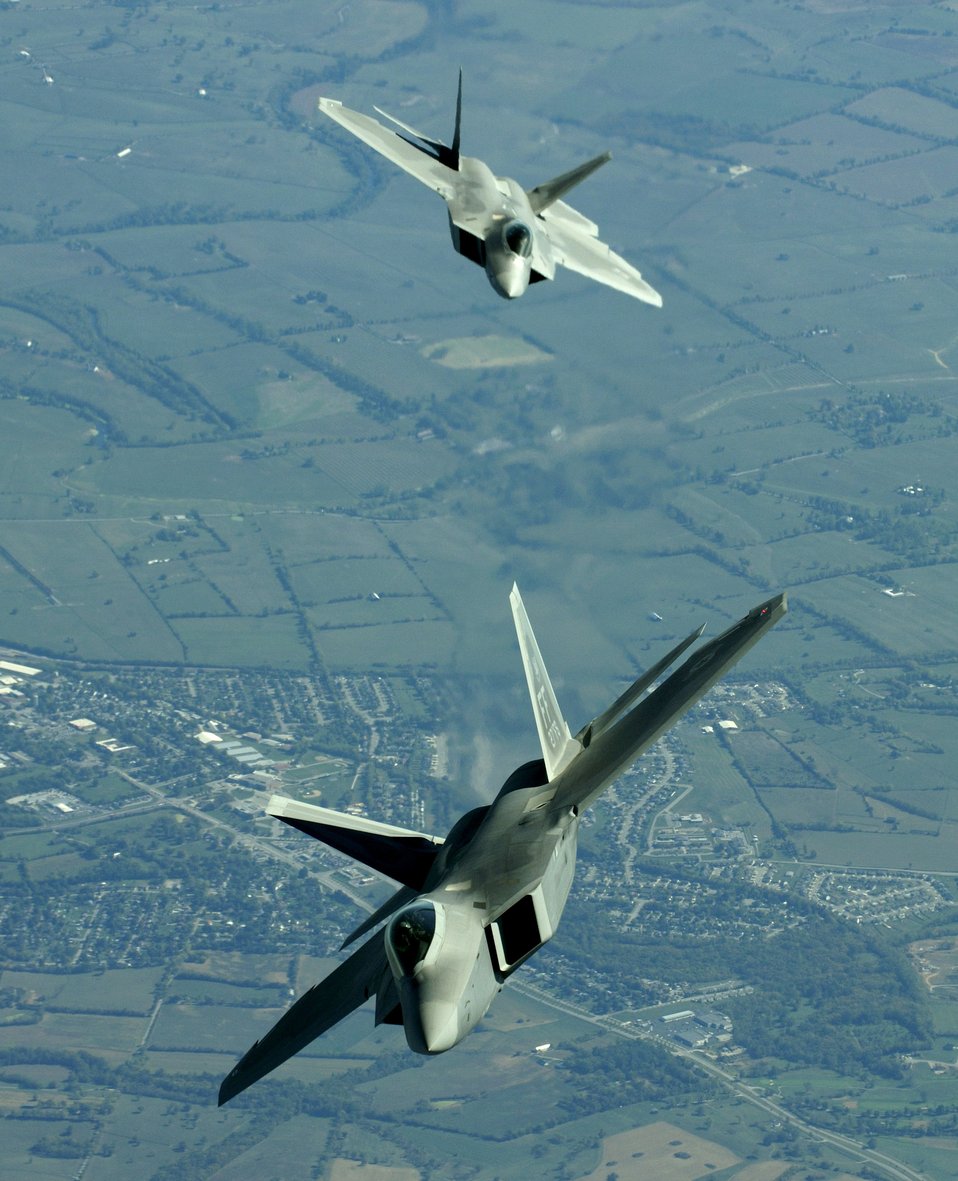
Pretty Raptors all in a row

OVER THE UNITED STATES -- Lt. Col. James Hecker (front) and Lt. Col. Evan Dertein line up their F/A-22 Raptor aircraft behind a KC-10 Extender to refuel while en route to Hill Air Force Base, Utah. Colonel Hecker commands the first operational Raptor squadron -- the 27th Fighter Squadron at Langley Air Force Base, Va. The unit went to Hill for operation Combat Hammer, the squadron's first deployment, Oct. 15. The deployment has a twofold goal: complete a deployment and generate a combat-effective sortie rate away from home.